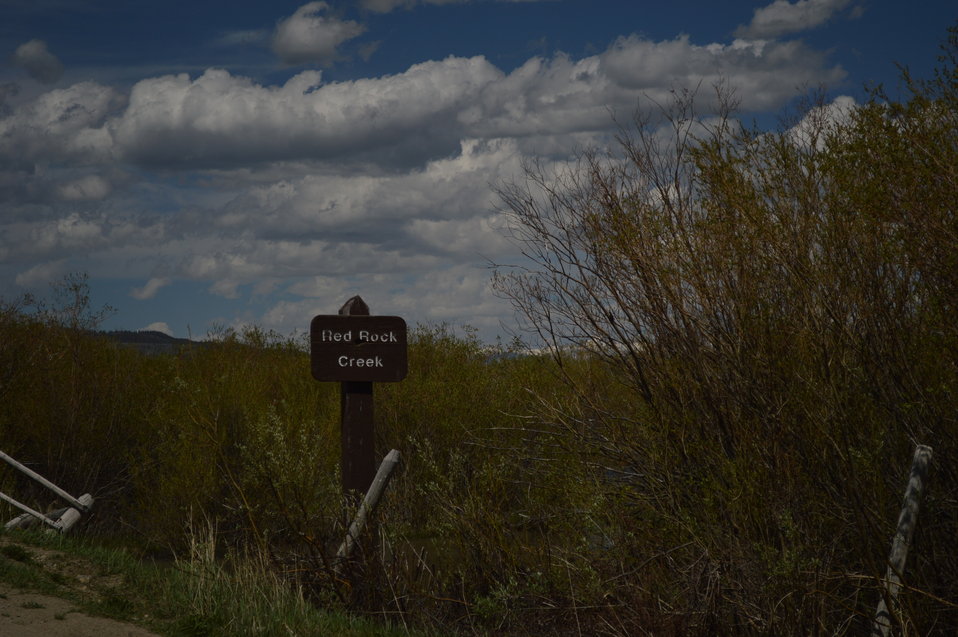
Regional Leadership Visit to Montana 2014